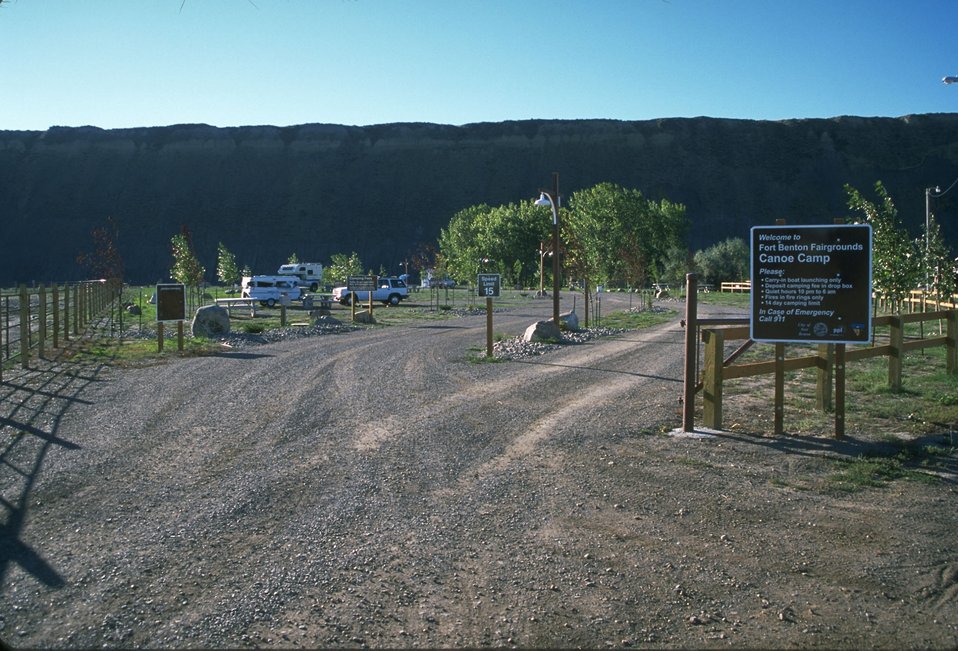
Canoe launch campgrounds at Fort Benton fairgrounds